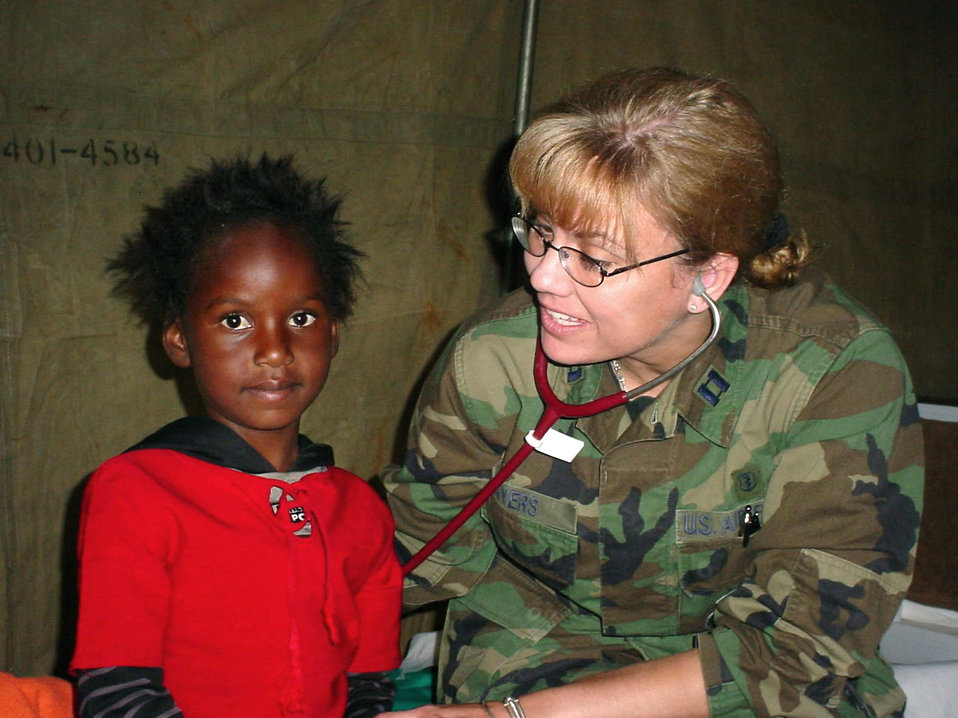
MedFlag 2004 kicks off

DITHOLO, South Africa -- Capt. Karyn Ayers, a family practitioner, listens to a child's breathing patterns to determine what kind of medical treatment she needs. Captain Ayers is part of a team of medics from the 48th Medical Group at Royal Air Force Lakenheath, England, who saw more than 600 patients here on their first day of MedFlag 2004. The annual two-week joint-combined medical training and civil assistance exercise provides rare medical training for U.S. Air Force medics and their South African defense force counterparts.